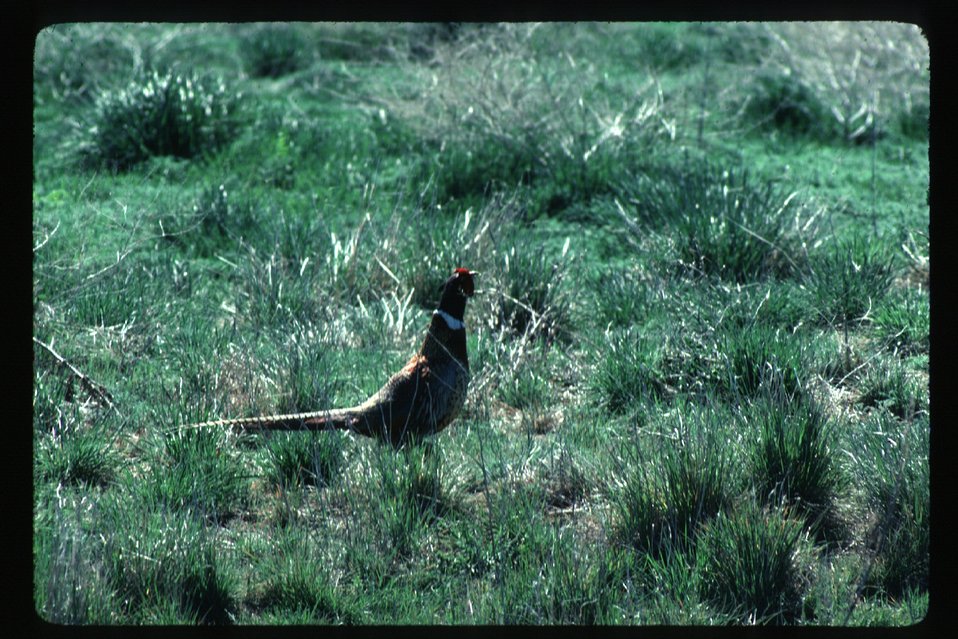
Pheasant Wildlife LSRD Lower Snake River District